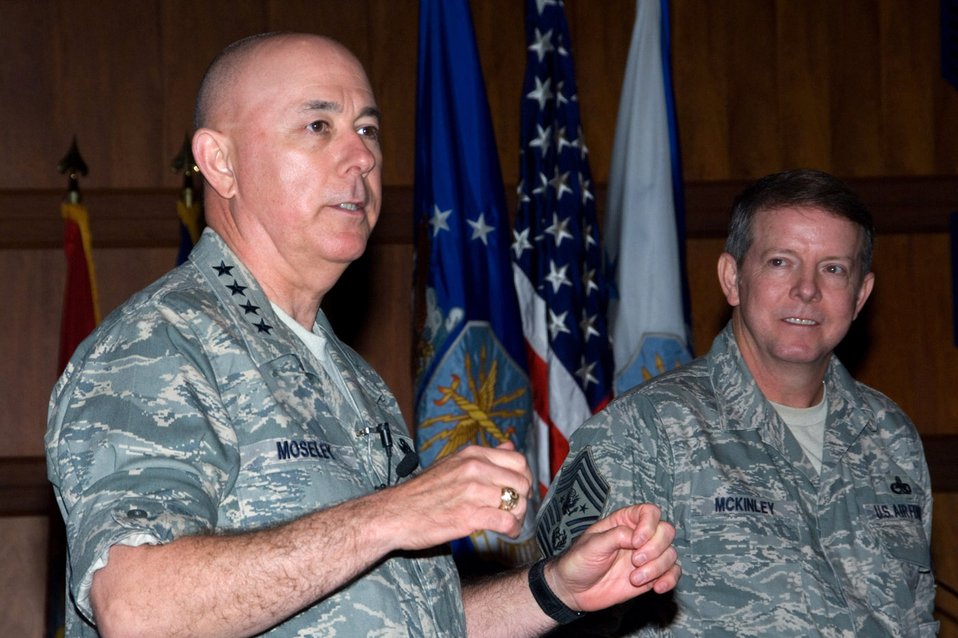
Gen Moseley Briefs Senior Enlisted Leaders Summit

The 18th Chief of Staff of the Air Force, General T. Michael Moseley, thanks Chief Master Sergeant of the Air Force Rodney J. McKinley and more than 300 chief master sergeants attending the Senior Enlisted Leaders Summit at Maxwell Air Force Base's Gunter Annex, Ala., May 21. General Moseley spoke with command chief master sergeants, career field managers and other key senior enlisted leaders about the challenges of today's Air Force and the importance of its evolution into the 21st Century.